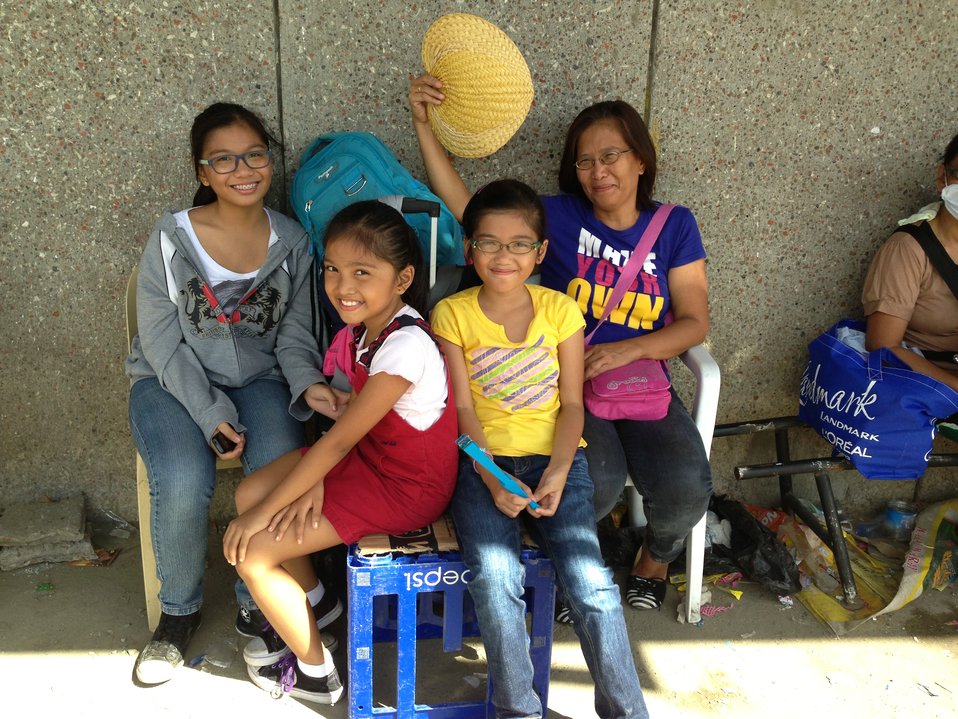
A Tacloban Family Stays Positive

One family, in line and waiting their turn for a flight out of Tacloban, still manage to smile despite the hardship endured, on November 16, 2013.